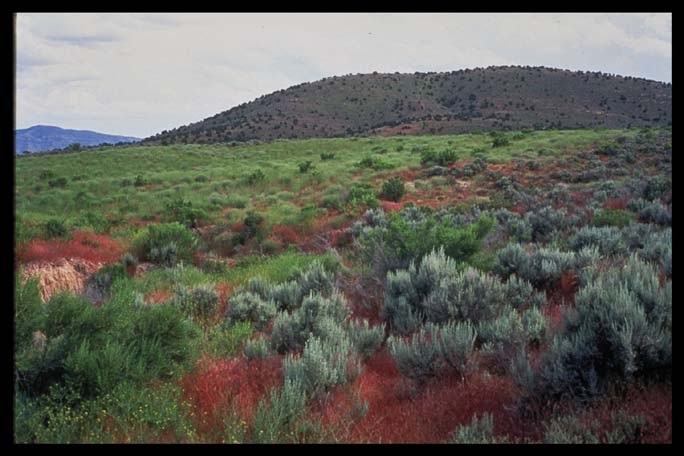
Landscape